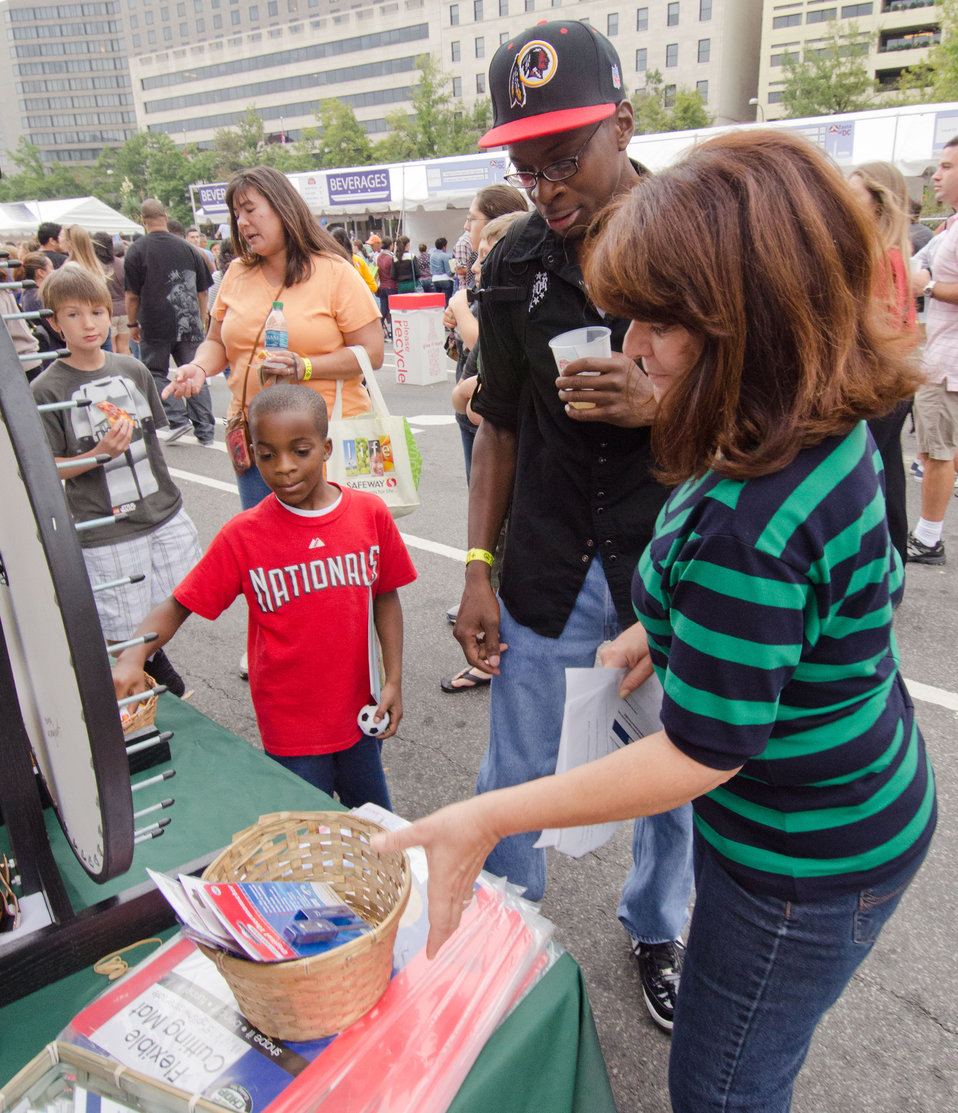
Agriculture Food Safety and Inspection Service Office of Public Affairs Consumer Education Food Safety Discovery Zone Program Manager Mary Harris, right, presents a selection of prizes to this young visitor who spun a jackpot question and answered it correctly, allowing him to choose a toy soccer ball, and a digital thermometer for his dad to check the temperature of cooked meat; at the USDA's mobile Discovery Zone at the Taste of DC event, in Washington D.C. on October 6, 2012. Also at the table are information materials that answer many every-day questions about maintaining safe food practices at home that support the four main principals of food safety – clean, separate, cook and chill. For more information see www.fsis.usda.gov/foodsafetymobile/
Taste of DC event highlights more than 70 eateries, 30 specialty beer providers, the United Service Organization (USO) Metropolitan Washington, and live bands who anticipate more than 500,000 people to attend over the course of the three-day event, which extends from the White House to the Capitol, along Pennsylvania Ave. Agriculture Food Safety and Inspection Service specialists present talks, cooking demonstrations, and information about 'My Plate.'